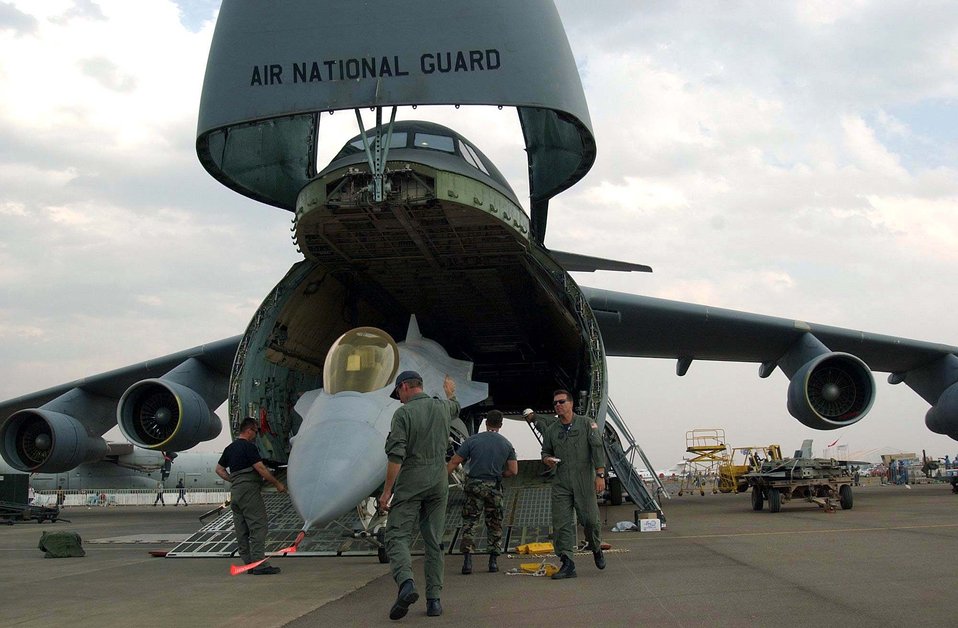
Guardsmen, aircraft wow South African crowd

PRETORIA, South Africa -- Airmen of the 174th Fighter Wing from Syracuse, N.Y., load an F-16 Fighting Falcon into a C-5 Galaxy for a flight home to the United States. They participated in the South African Aerospace Exhibition at Waterkloof Air Force Base here.